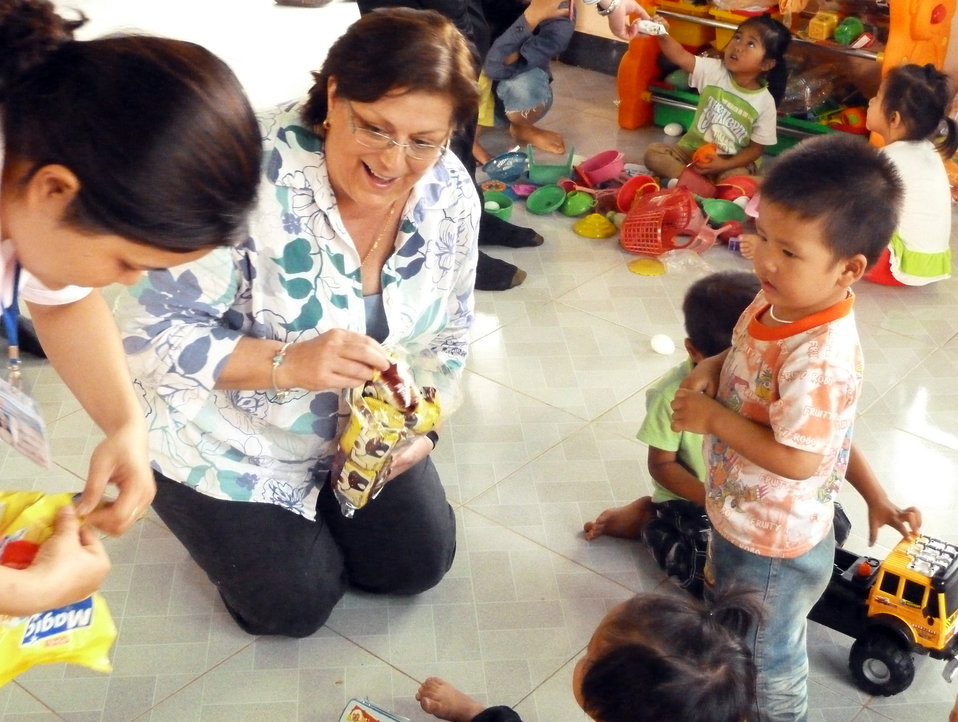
U.S. Deputy Chief of Mission Claire Pierangelo visits children at a preschool refurbished with USAID funds